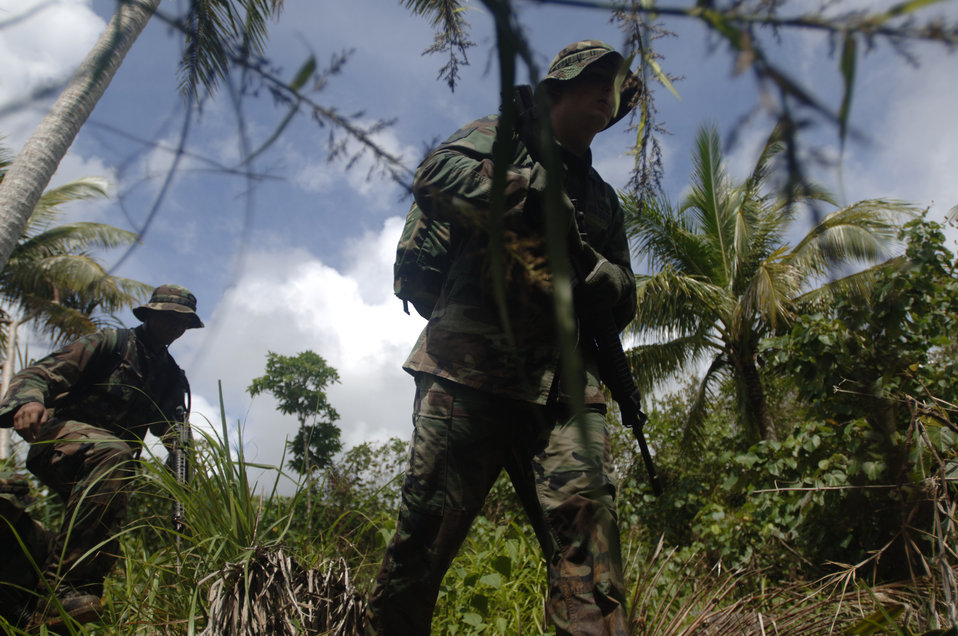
Special Response Team Training Course

ANDERSEN AIR FORCE BASE, Guam -- Staff Sgt Jason Brown hikes through the jungles of southern Guam during a patrolling exercise while participating in the Special Response Team Course held at Commander Naval Forces Marianas. SRT is a specialized course used to train security personnel in close combat, specialized weapons, building clearing techniques and military operations on urbanized terrain. Sergeant Brown is assigned to the 613th Contingency Response Group.